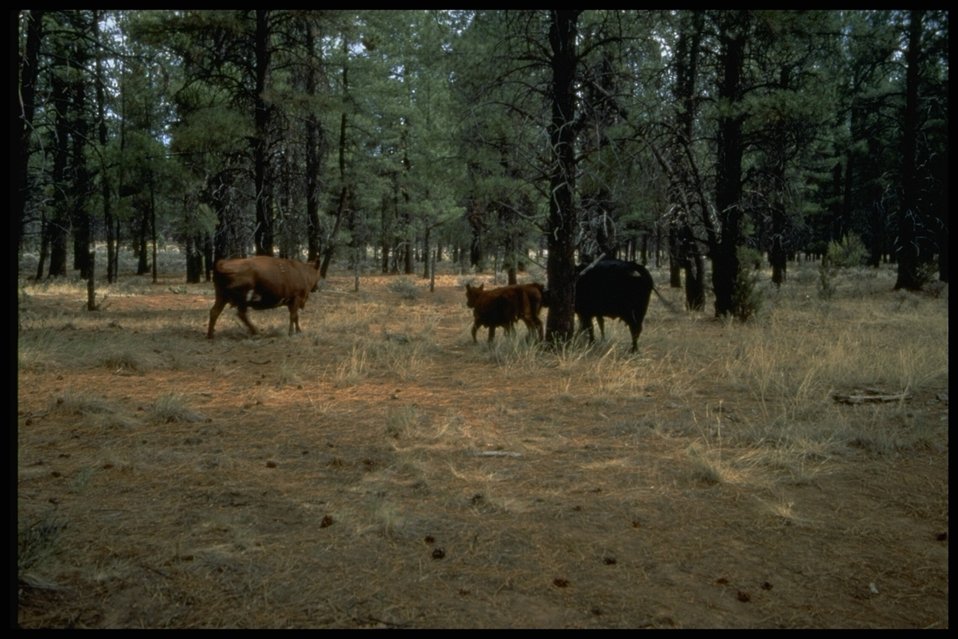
Cows found walking around in the forest.